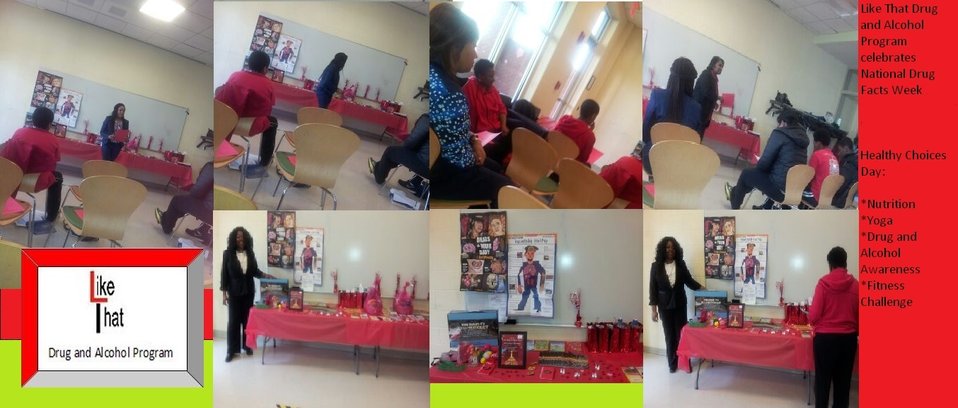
Drug Facts Week at the Charles Houston Rec Center Top Teens.